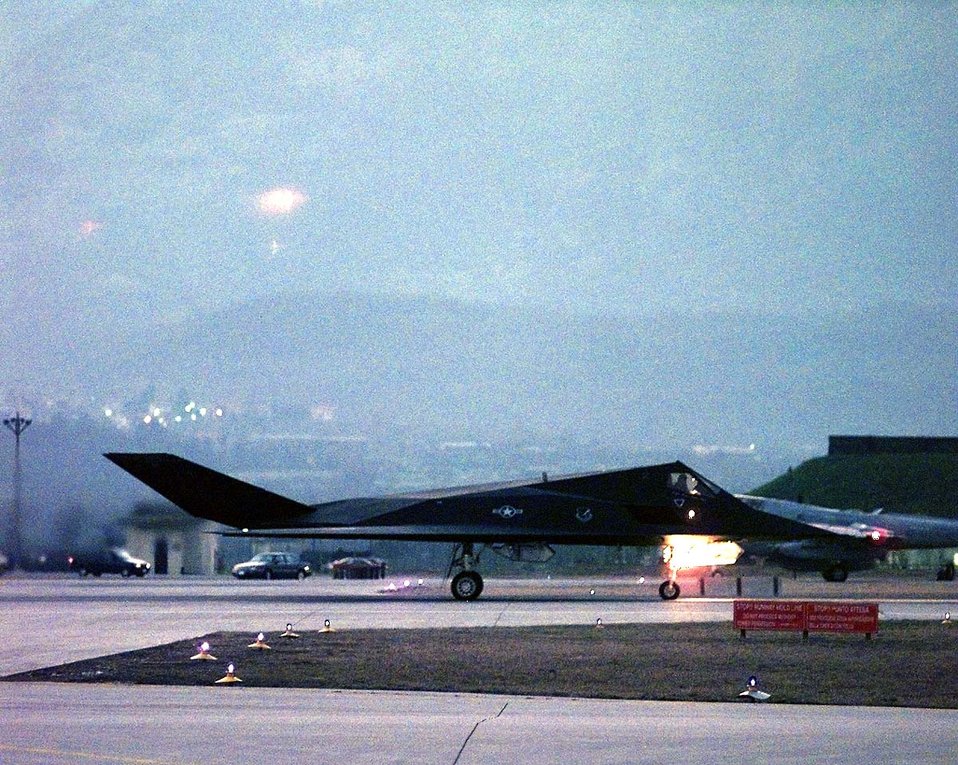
Good to go

AVIANO AIR BASE, Italy -- An F-117 Nighthawk from the 8th Expeditionary Fighter Squadron at Holloman Air Force Base, N.M., prepares to take off from Aviano Air Base, Italy, March 24. The F-117s are participating in air strikes against targets in the Balkans during NATO operations.